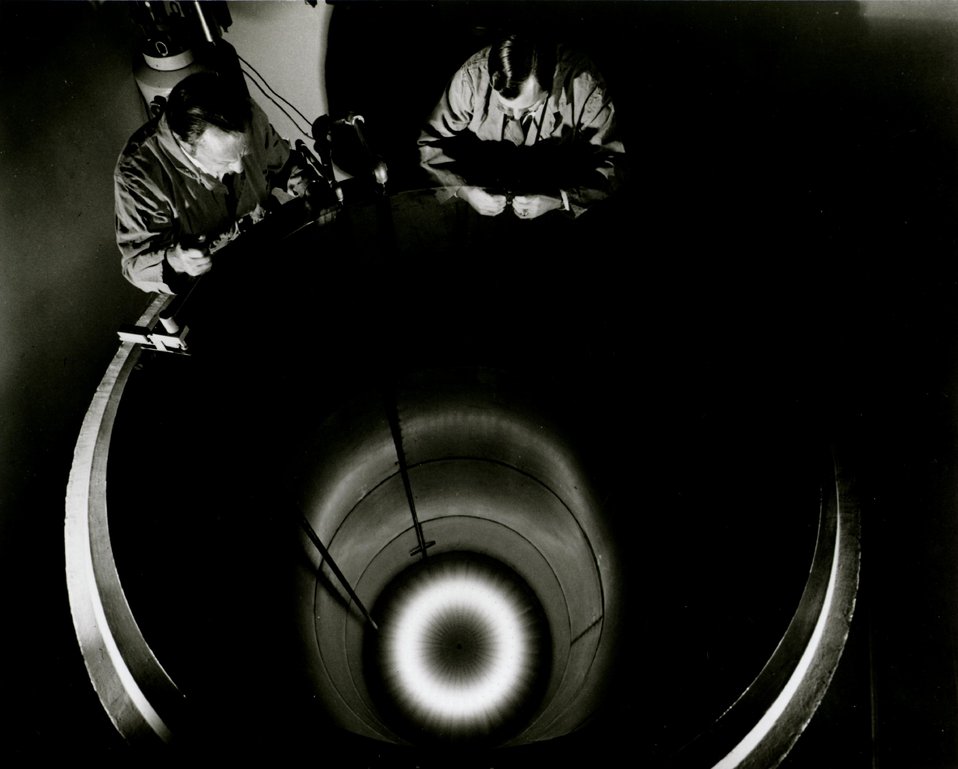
Cobalt-60 High-Intensity Radiation Source...Scientists at the AEC's Lawrence Livermore Laboratory (Calif.) now have their own new cobalt-60 high-intensity radiation source and no longer have to ship their samples to the Savannah River Plant (S.C.) for exposures to a large dose of gamma rays and then wait weeks for its return. Circa 1972.